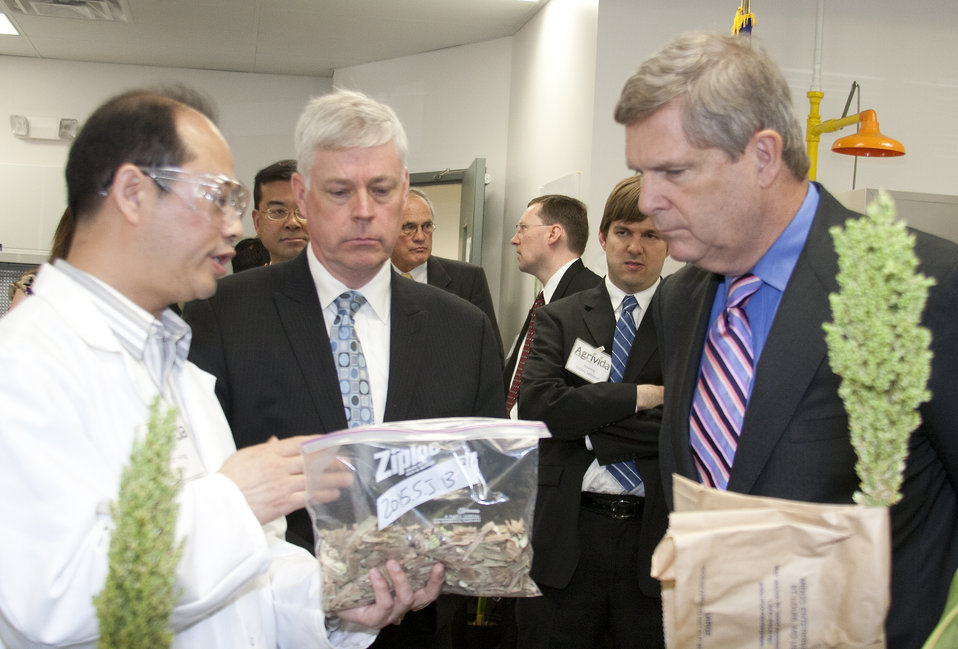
Agriculture Secretary Tom Vilsack visited Agrivida Inc., in Medford, MA, on Friday, May13, 2011. Agivida Inc. is a local company involved in developing new technologies to produce the next generation of biofuels, which will support economic development in rural America. Agrivida is developing methods to reduce the cost of converting biofuel feedstocks into sugar, focusing on sorghum, corn stover, and switchgrass. (L to R) Agrivida scientist Dongcheng Zhano, Massachusetts State Energy Secretary Richard Sullivan, and Agriculture Secretary Tom Vilsack are shown how the harvested biomass looks after milling, when it first enters the process. The plants in the foreground are sorghum plants that Agrivida is using for engineering experiments.